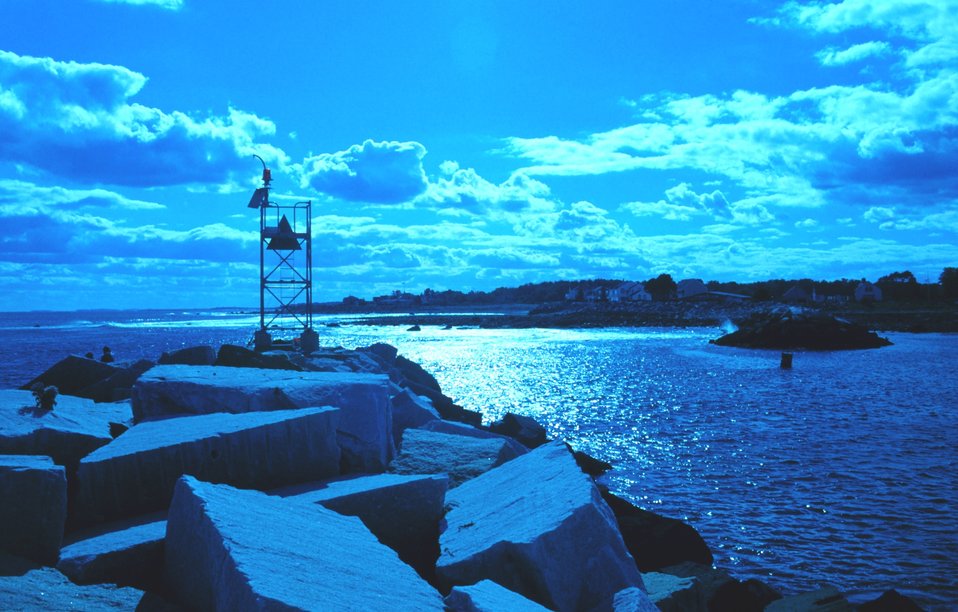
Entrance to the harbor at Odiorne Point State Park.